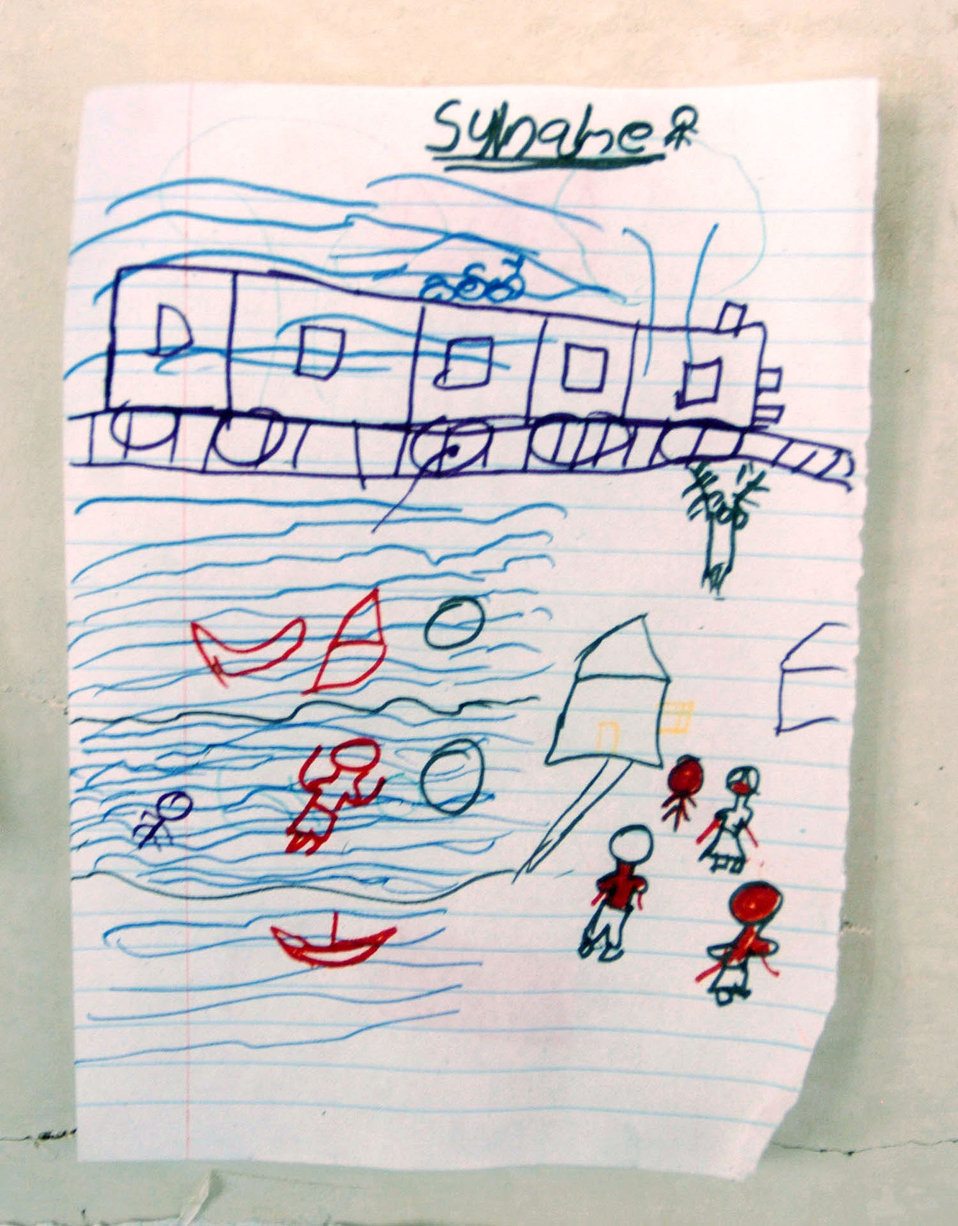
The human element of a humanitarian mission

GALLE, Sri Lanka -- A drawing by a Sri Lankan child shows the trauma of what he experienced after tsunamis as high as 50 feet devastated his town Dec. 26. U.S. servicemembers are in the country helping deliver food supplies at various locations.